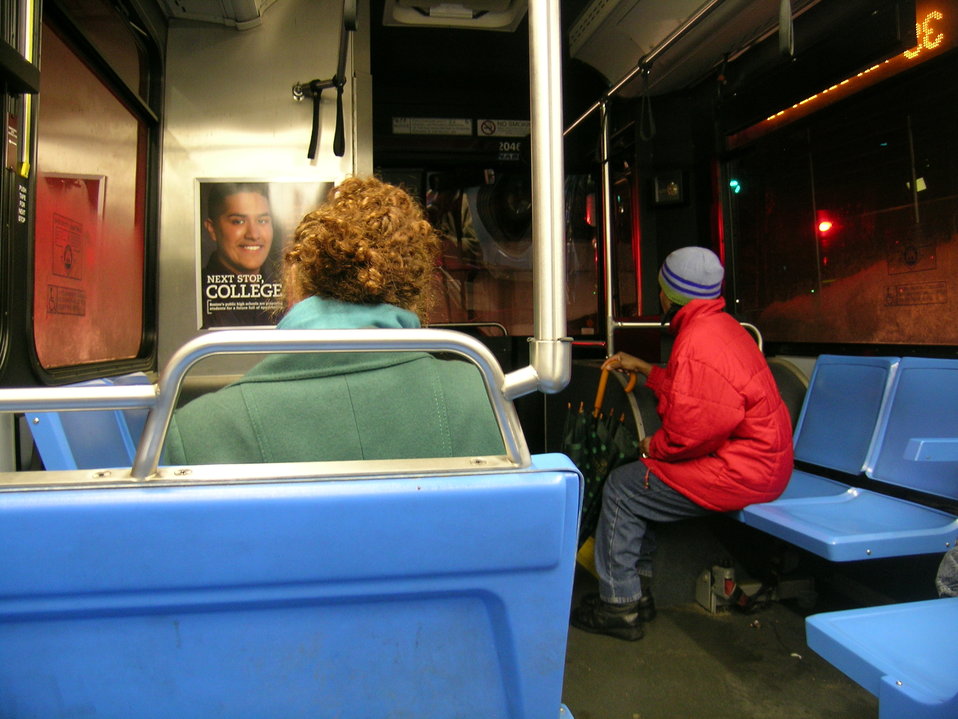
A #39 MBTA bus inbound from Forest Hills Station to Back Bay Station via Huntington Avenue.